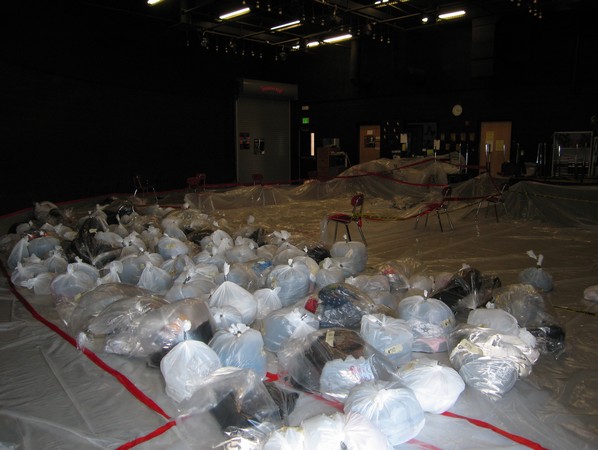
Students belongings wait to be screened for mercury contamination

After a mercury spill at an Arizona high school, students turn in their belongings that may have been contaminated with mercury. They were stored in strong plastic bags in the school's drama room, where they wait for mercury contamination screening.